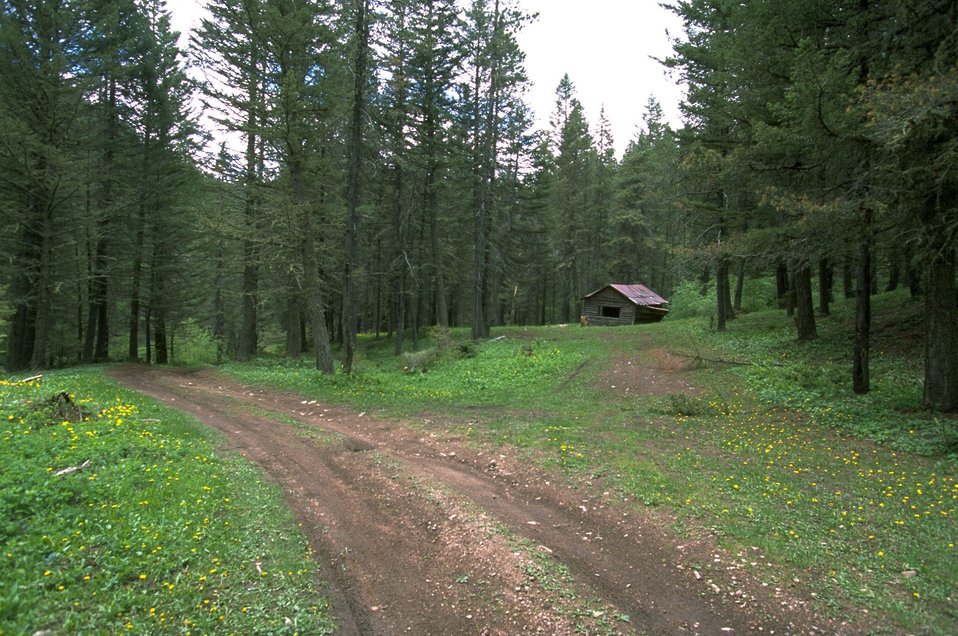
Road and old cabin among the trees in LimeKiln Canyon